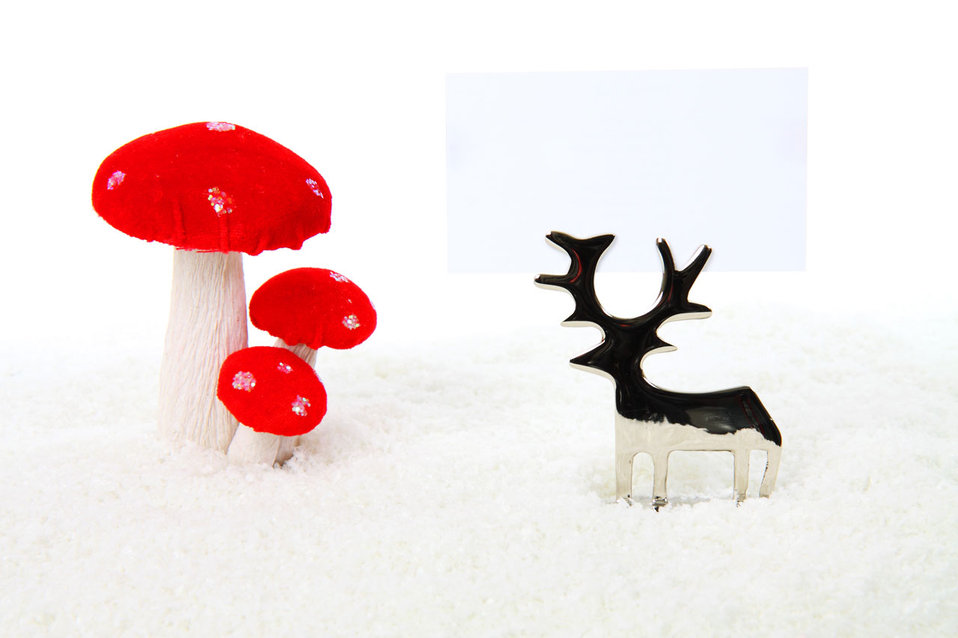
Reindeer christmas decoration

Reindeer holding a business card and mushroom christmas decoration.